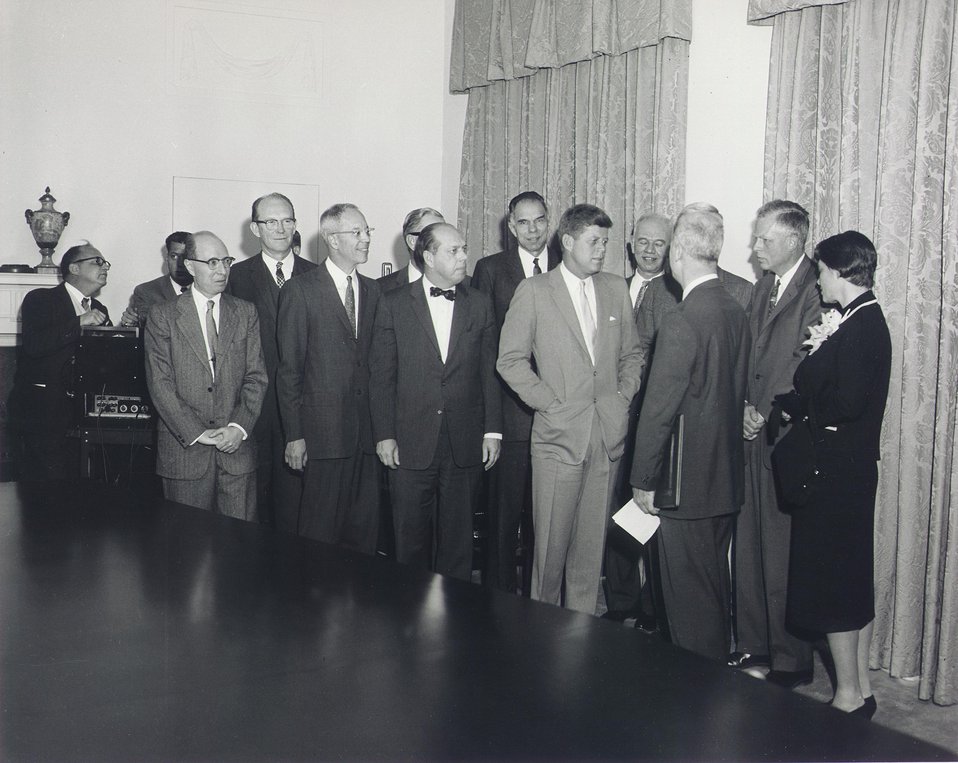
Fermi Award Ceremony for Dr. Bethe in Washington on Dec. 1, 1961.